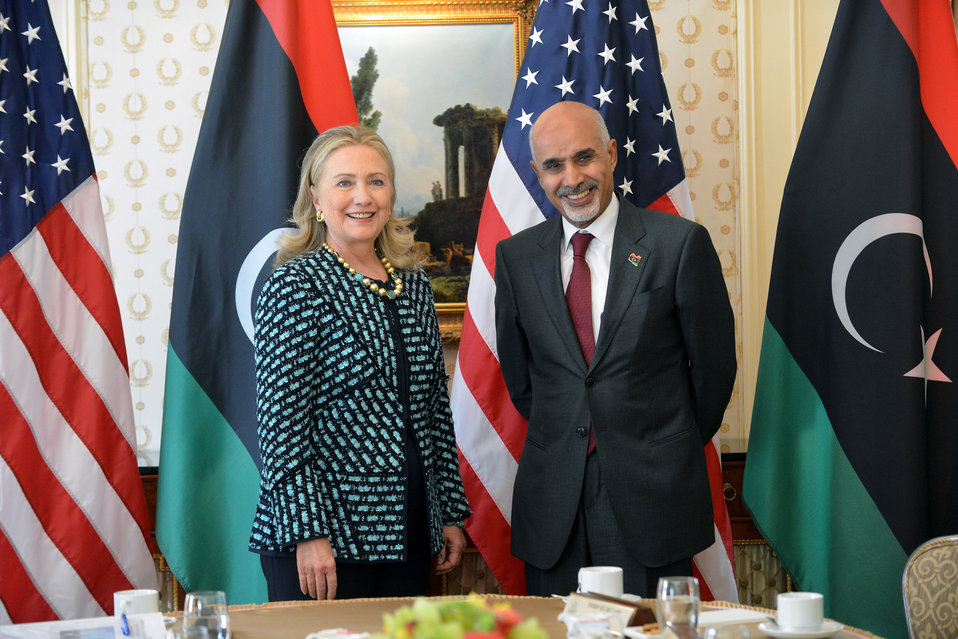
Secretary Clinton Meets With Libyan President Magariaf

U.S. Secretary of State Hillary Rodham Clinton meets with Libyan President Mohamed Magariaf in New York, New York on September 24, 2012.